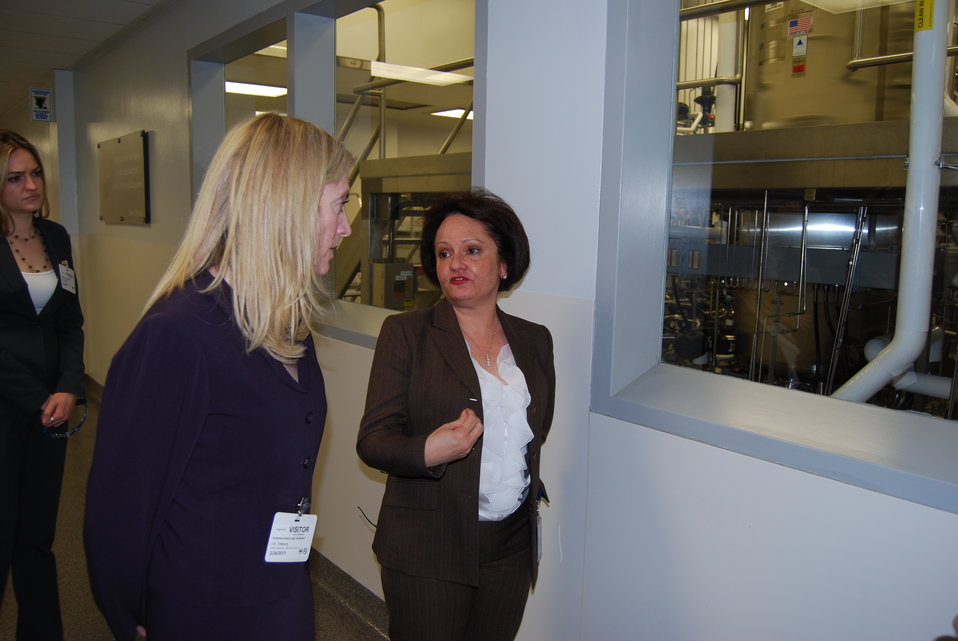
Lael Brainard in North Carolina

Under Secretary for International Affairs Lael Brainard was in North Carolina to hear from local business leaders about the state of the economy, how their firms view opportunities and challenges abroad, and how the Administration can better support their export and business objectives. Here, she talks with Dr. Esther Alegria at Biogen Idec.